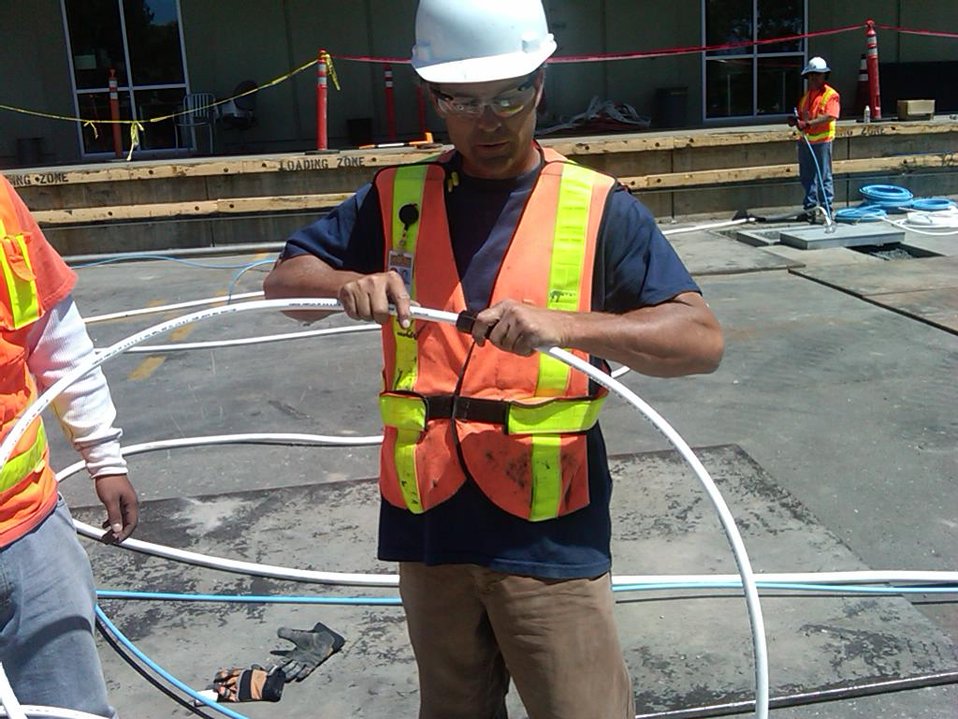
Recovery Act Supports Soil and Debris Cleanup, Groundwater Treatment at SLAC

Recovery Act workers are on track to remove more than 30,000 cubic yards of contaminated soil and debris at the SLAC National Accelerator Laboratory by September 2011.
The Recovery Act invested $14.3 million in legacy cleanup activities at SLAC. In addition to removing contaminated soil and debris that is shipped to local disposal facilities, Recovery Act workers installed three new groundwater treatment systems.